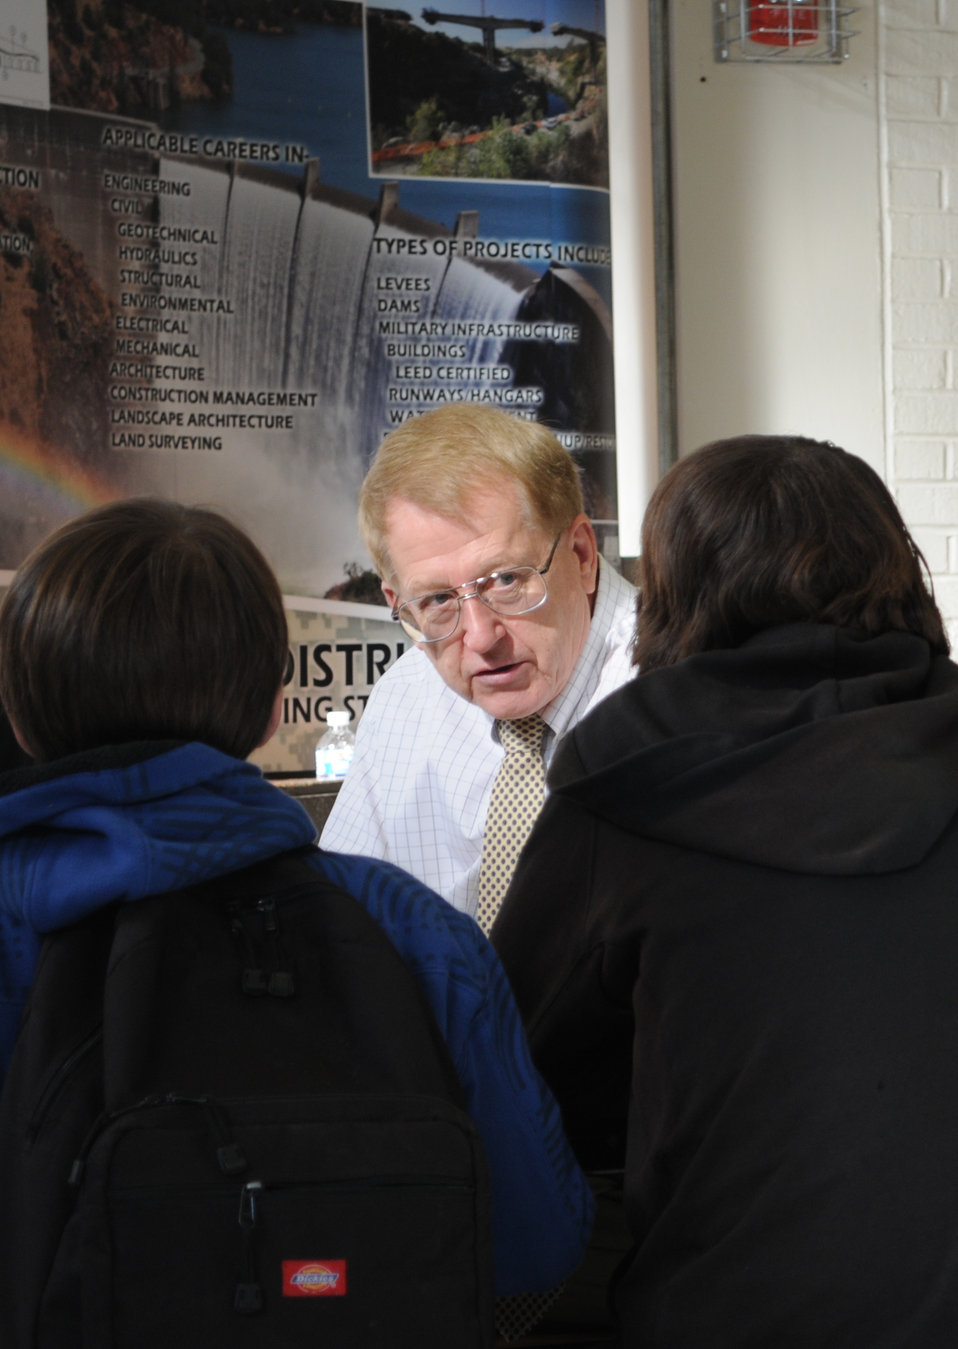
ANTIOCH, Calif. – U.S. Army Corps of Engineers Sacramento District structural design section chief Roger Zemba answers interview questions from students with the Academy of Engineering and Design for a Greener Environment (EDGE) at Antioch High School here Jan. 31.

Zemba and district senior electrical engineer John Parrish were invited to share stories of their educational and vocational backgrounds and explain the Corps’ various missions to more than 120 freshmen enrolled in the school’s new four-year academy, which incorporates a curriculum linking science and math education to engineering careers.

Zemba emphasized the value and importance of education to the students and showed gratitude to the military for his own education opportunities. “I have my Army experience to thank for my position today,” said Zemba, a Vietnam veteran. “If it weren’t for my military service, I would probably not have gone to college.”